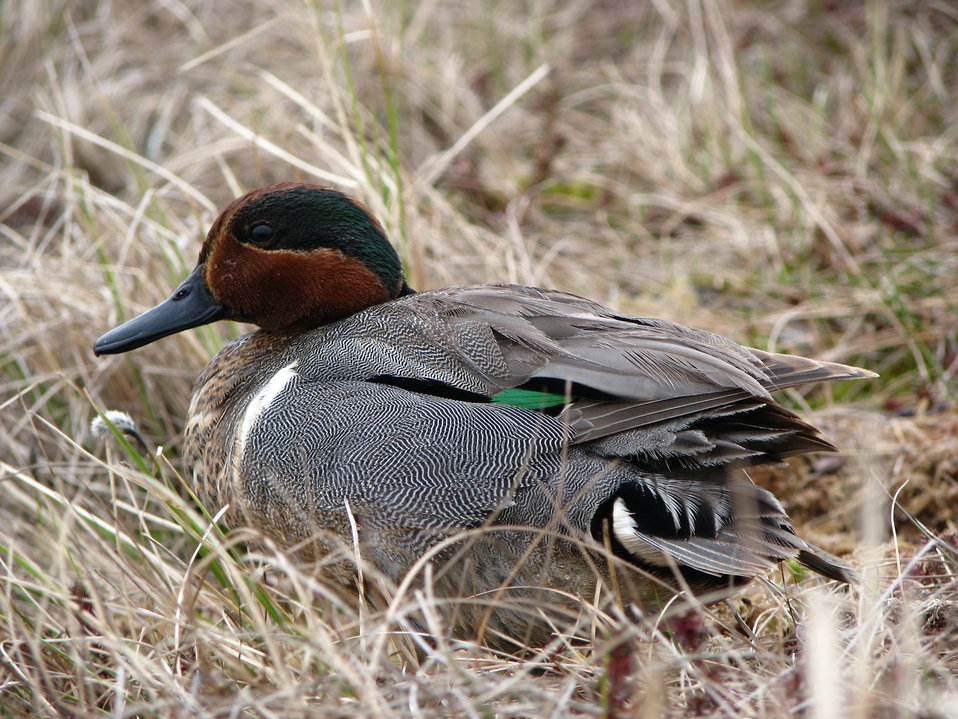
Green-winged teal male

USFWS Yukon Delta NWR